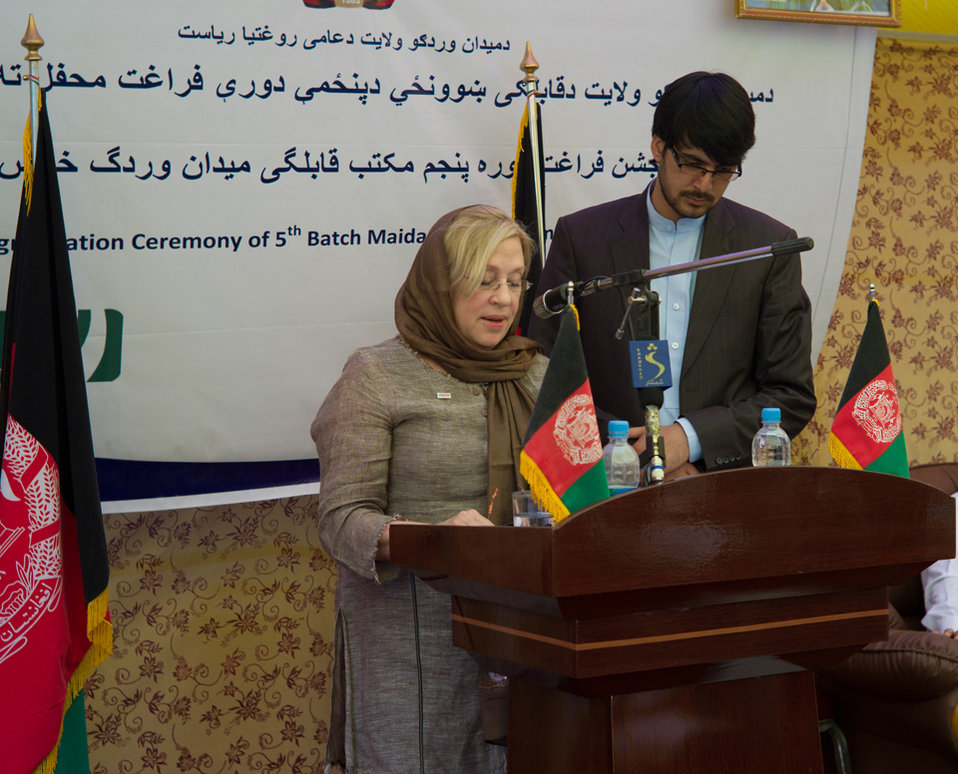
Carol speaking 2